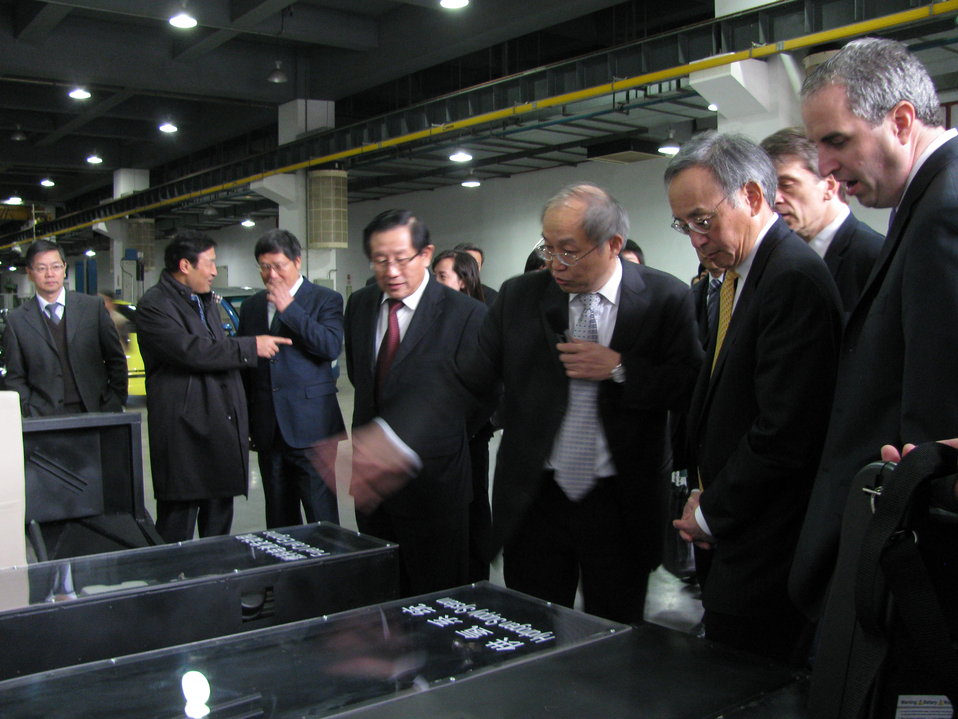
Shanghai 045